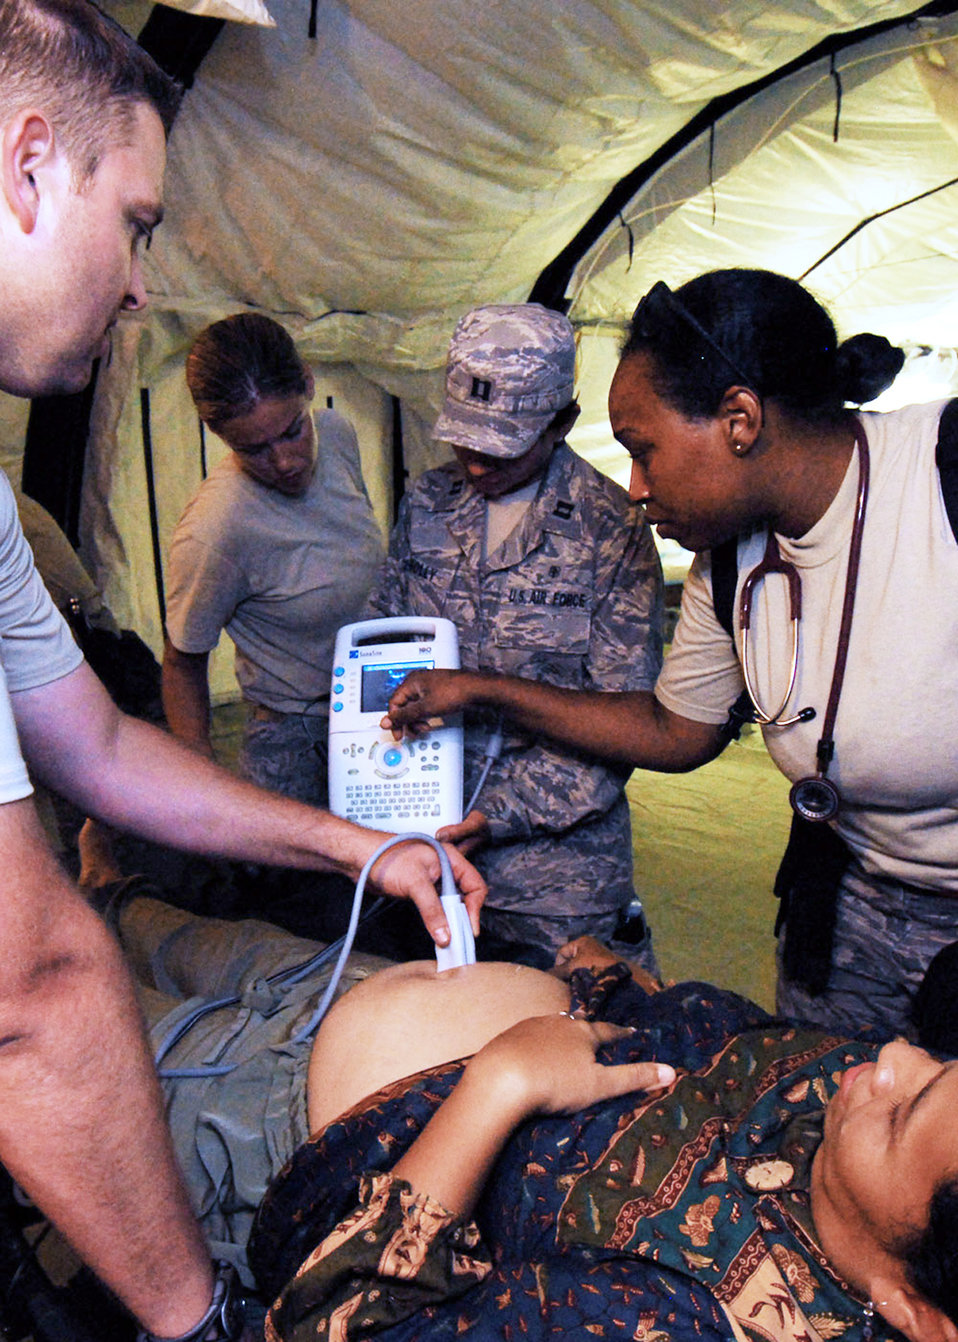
HARRT arrives in Indonesia

Air Force humanitarian assistance rapid response team medical professionals perform an ultrasound on a pregnant patient Oct. 7, 2009, in a mobile field hospital in Padang, Indonesia.